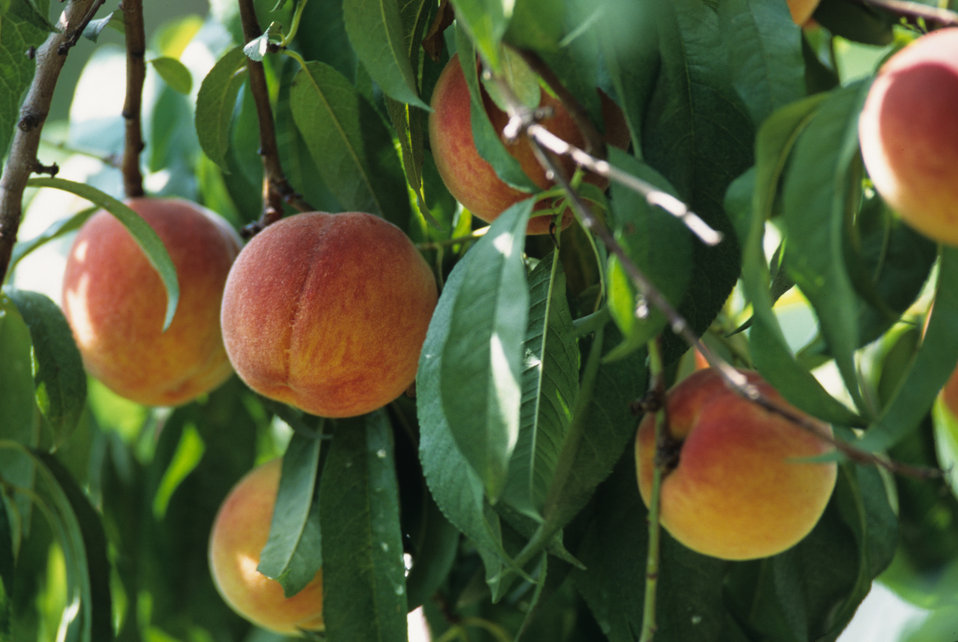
Peaches on the Williams Manor Peach Orchard in Morrisville, VA are ready for picking in mid August 1995.